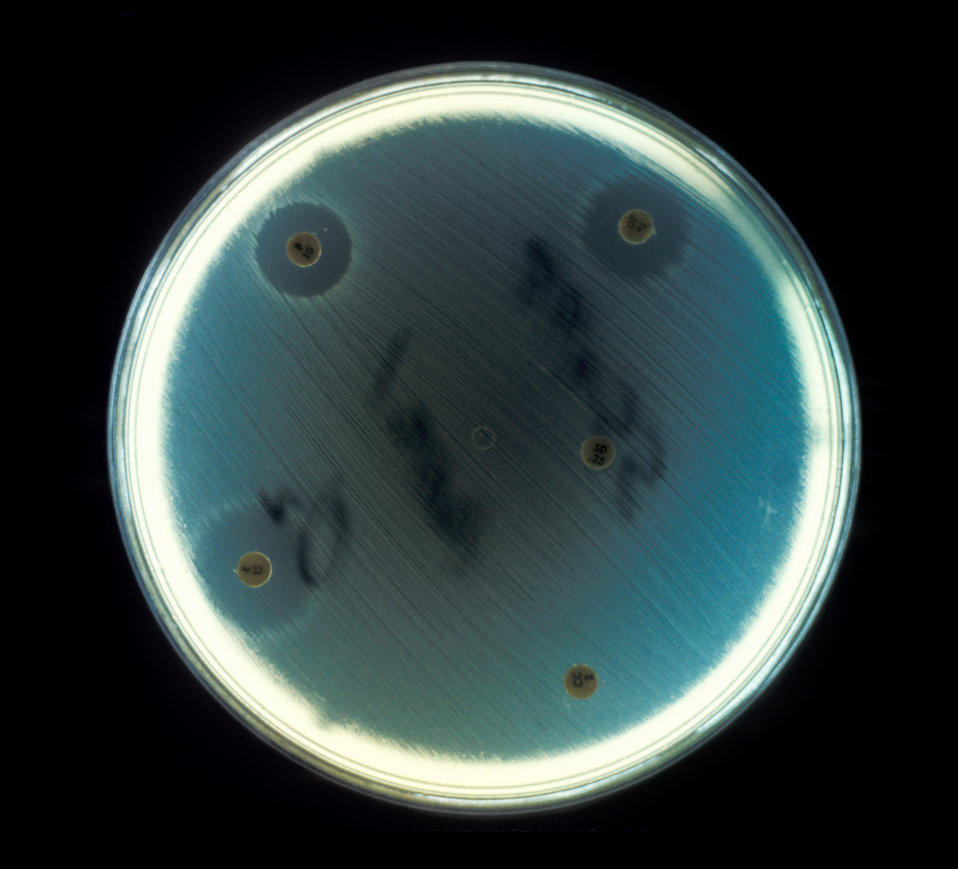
Here E. faecalis bacteria are being cultured on an agar plate during a drug-sensitivity test in an anaerobic environment.